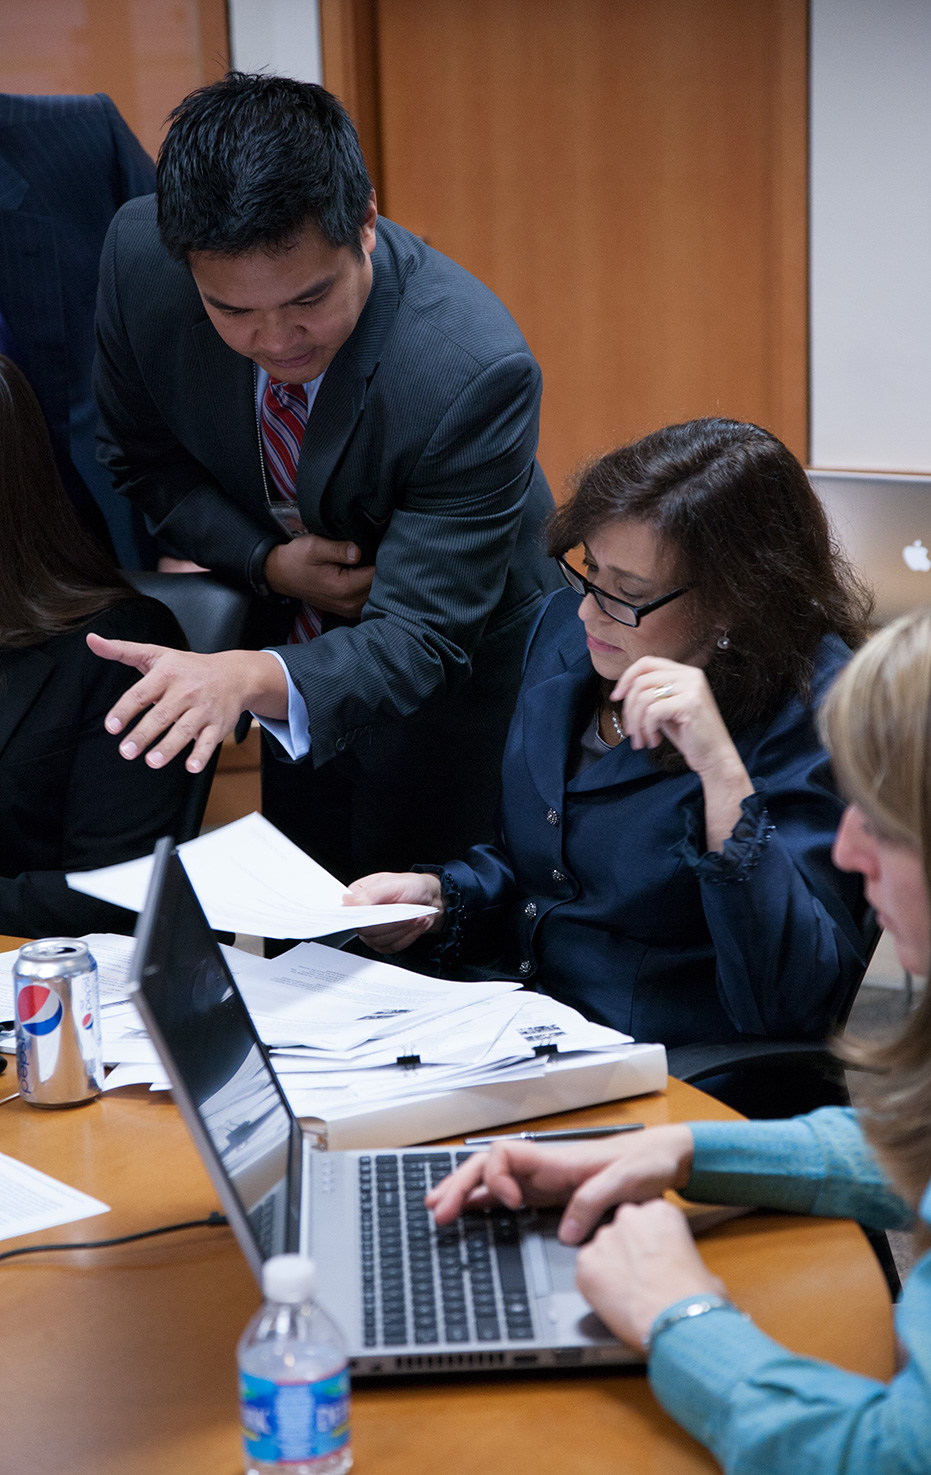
Under Secretary Sonenshine Participates in a Global Twitter QandA

Under Secretary of State for Public Diplomacy and Public Affairs Tara Sonenshine, @TSonenshine, participates in a Global Twitter Q and A on December 5, 2012.